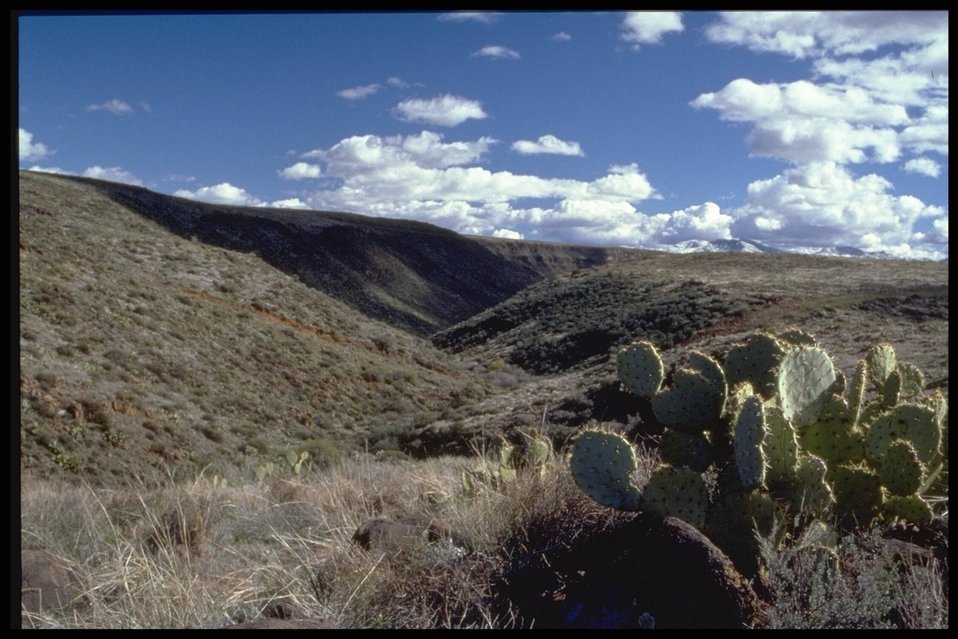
The Agua Fria Canyon below a cloud peppered Arizona sky. Prickly pear cacti border the rim of the canyon.